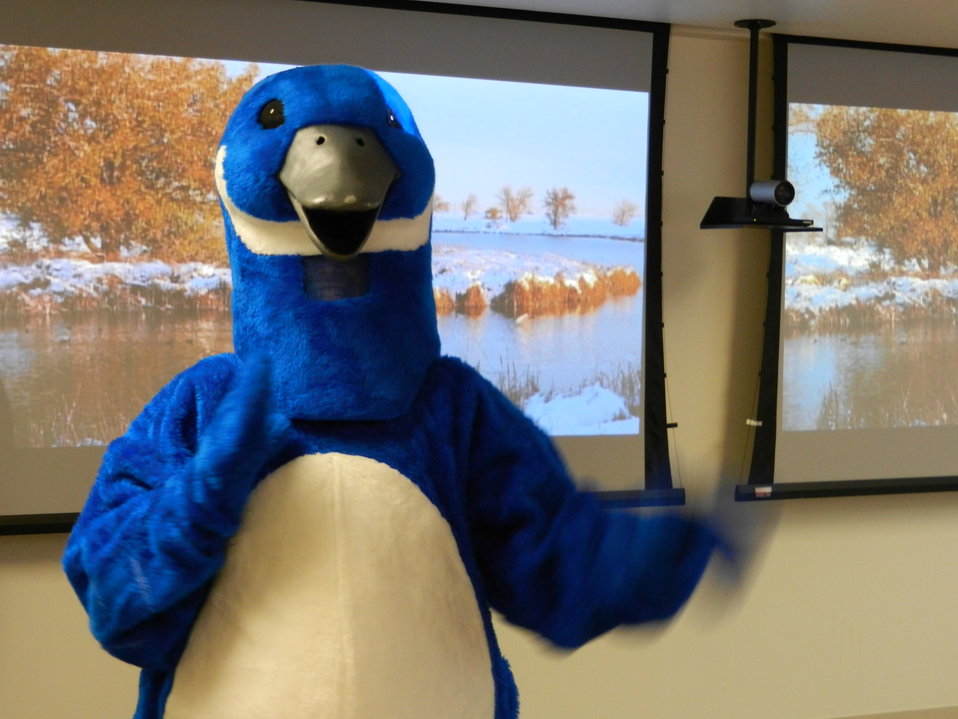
Puddles welcomes guests